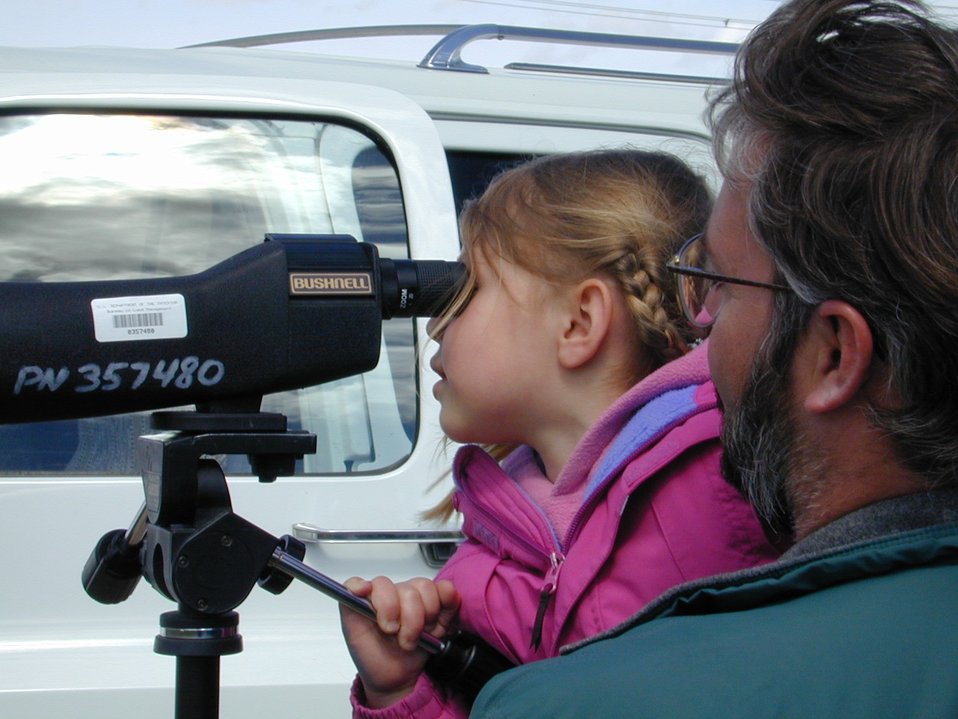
Child Looking through telescope Snake River Birds of Prey National Conservation Area Lower Snake River District LSRD Snake River Canyon